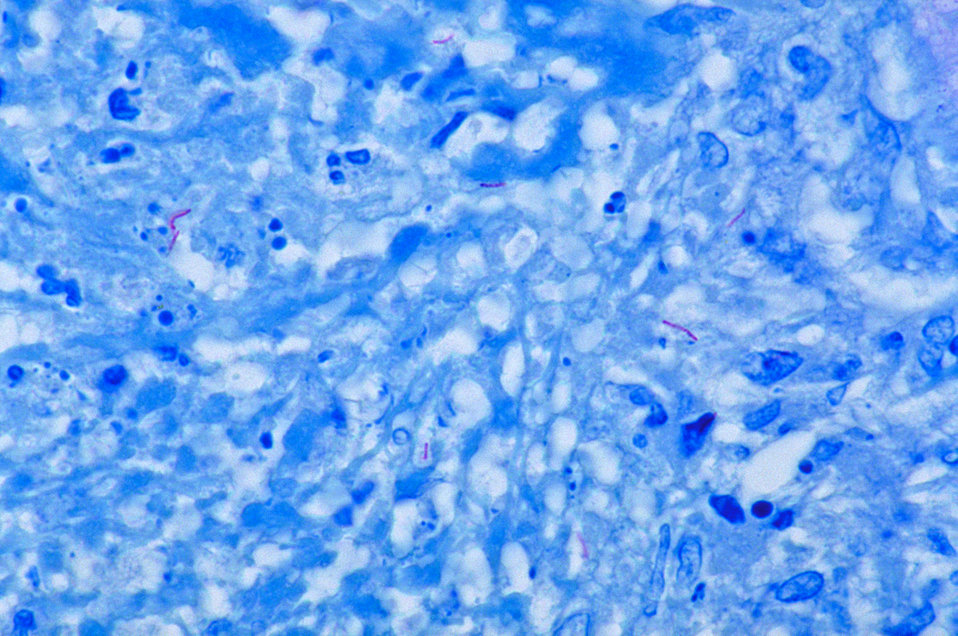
Histopathology of tuberculosis, placenta